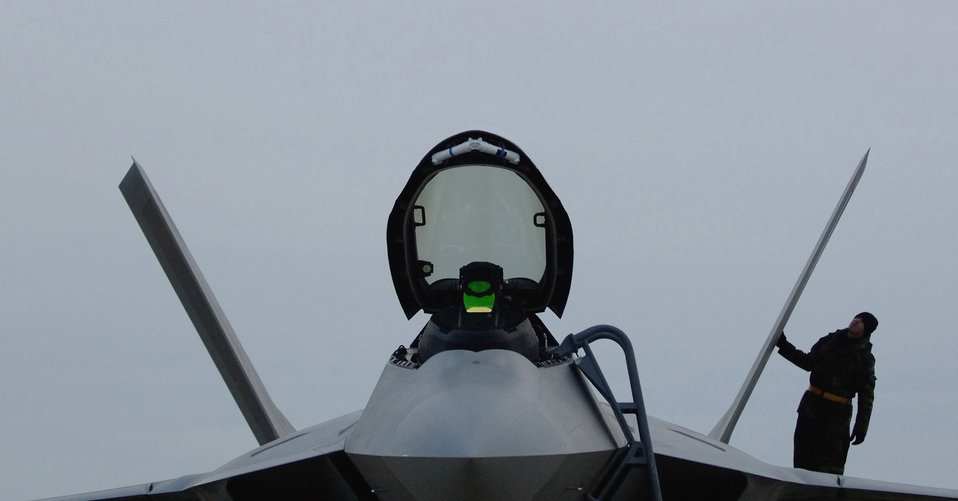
Combat ready

LANGLEY AIR FORCE BASE, Va. (AFPN) -- Crew chief Staff Sgt. Adam Murtishaw does a post flight inspection on an F-22A Raptor after a Dec. 14 mission. The 27th Fighter Squadron earned initial operating capability today, which means the stealth jet is combat ready. Sergeant Murtishaw is with the 27th Aircraft Maintenance Unit.